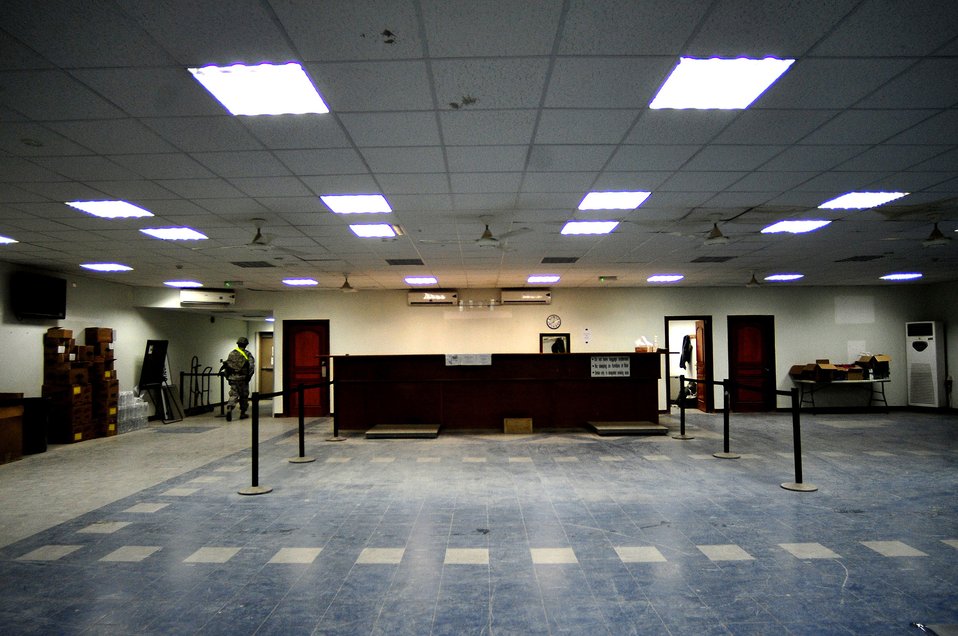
Last Airmen flying out of Iraq

The 407th Air Expeditionary Group Passenger Terminal, which is normally bustling with traveling service members, is being used for the last time Dec. 18, 2011, by the last remaining Airmen leaving Ali Air Base, Iraq. The last remaining U.S. airmen left Iraq per the Iraq and U.S. 2008 Security Agreement that required all U.S. service members to be out of the country by Dec. 31, 2011.